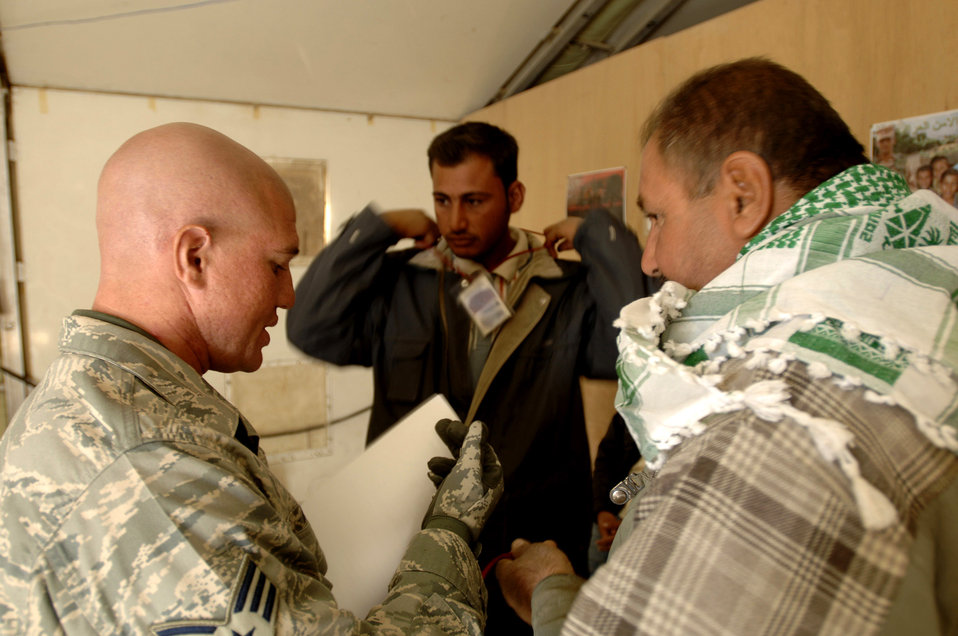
Force protection Airmen keeps vigilance in the forefront

Senior Airman Paul Rael hands local Iraqi nationals passes so they can work on base Nov. 27. Airman Rael is assigned to the 407th Expeditionary Security Forces Squadron force protection and is responsible for escorting and supervising the local nationals as they work. Airman Rael is an aircraft metals technology machinist from Whiteman Air Force Base, Mo.